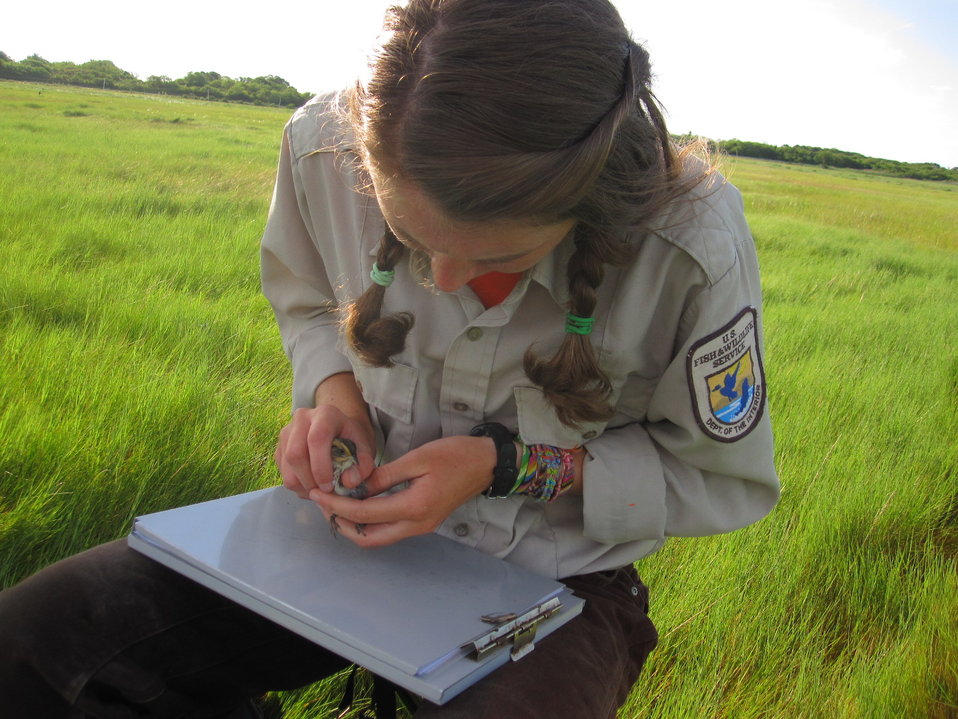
Claire Revekant with bird

U.S. Fish and Wildlife Service